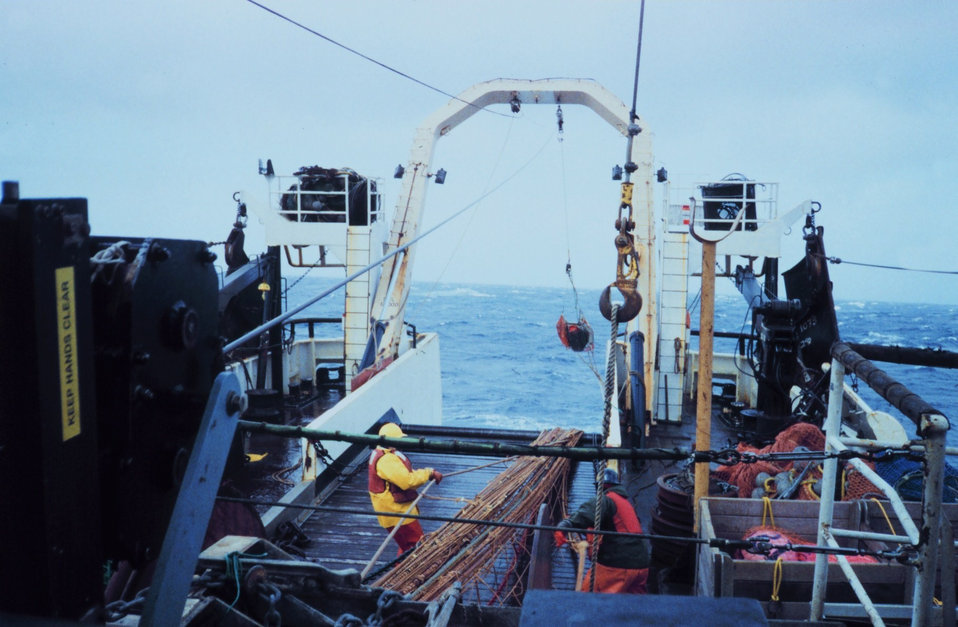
Hauling back the net at the end of a trawl.